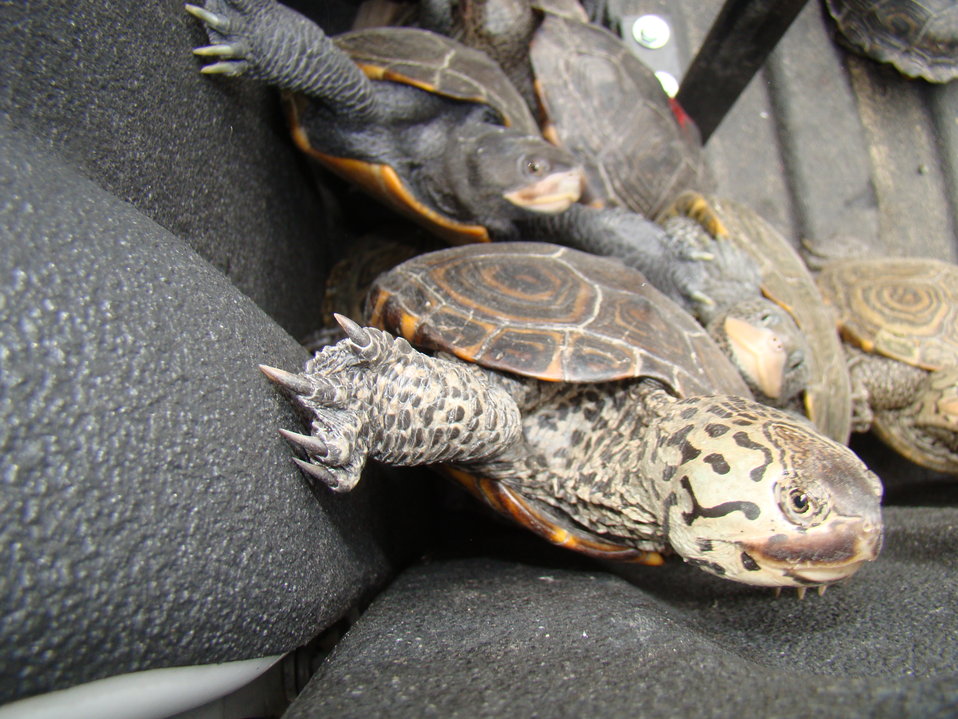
An adult Diamondback terrapin is too close to the runway at John F. Kennedy (JFK) International Airport, New York on May 23, 2012. Jenny and the USDA Wildlife Services staff at JFK scare away wildlife with a number of technical solutions like pyrotechnics and noise making devices that help to prevent airline strikes with wildlife. Wildlife biologists at JFK work to redirect the terrapins out of harm’s way and more directly to areas that are suitable for nesting.